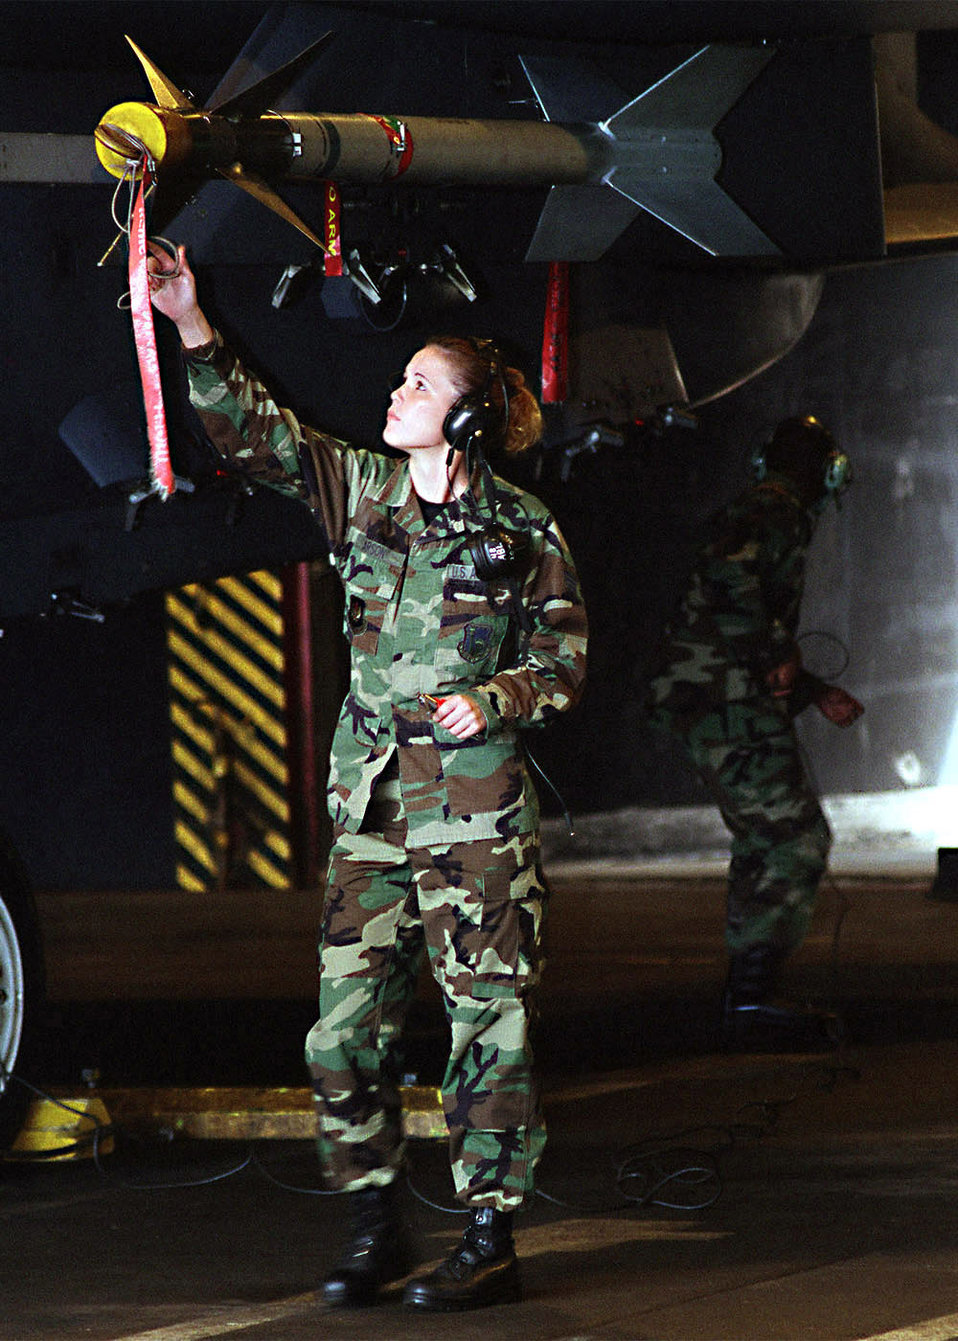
Tag check

ROYAL AIR FORCE LAKENHEATH, England -- Senior Airman Tara Carson removes preflight tags from an F-15E Strike Eagle prior to engine startup here. Carson is assigned to the 492nd Fighter Squadron, 48th Fighter Wing.